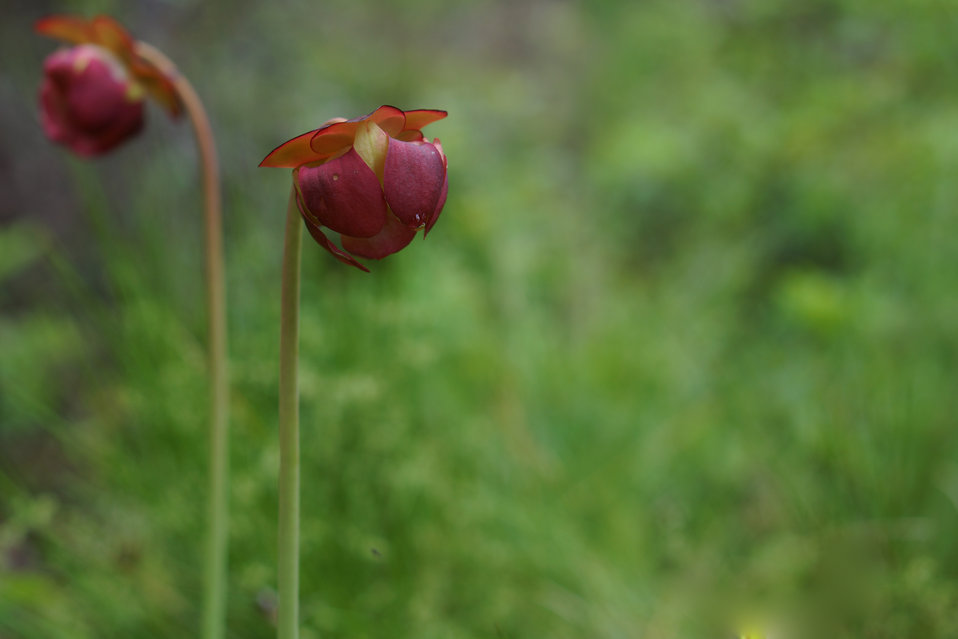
Mountain purple pitcher plant flowers

In May, bog conservationists from Tennessee, North Carolina, and Georgia convened in the north Georgia mountains for the spring, 2014 meeting of the Bog Learning Network. The event provided an opportunity for biologists to see, first hand, the result of management efforts at two north Georgia bogs. More importantly, the outings provided an opportunity to share innovative approaches to bog management, such as the role of the Georgia Plant Conservation Alliance in conserving rare plants and coordinating a cadre of volunteers to work on bog management.

The Bog Learning Network was convened in the winter of 2013 as a way to bring together people working for bog conservation across the Southern Appalachians. Southern Appalachian bogs are one of North America’s rarest habitats and home to many rare plants and animals.